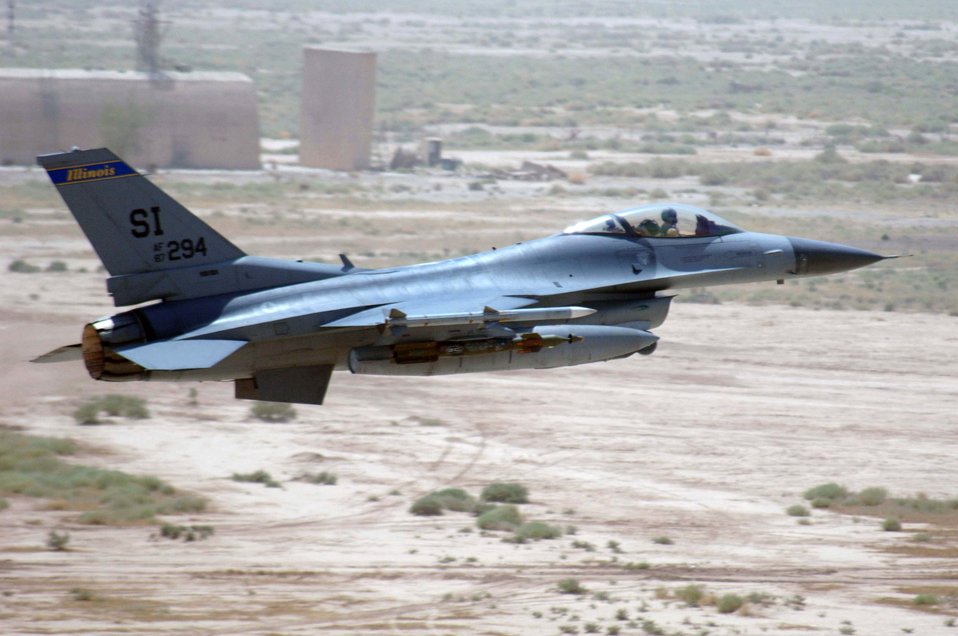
Sand and sky

An F-16 Fighting Falcon assigned to the 332nd Expeditionary Fighter Squadron at Balad Air Base, Iraq, takes off on an Operation Iraqi Freedom mission Friday, July 21. The F-16 jet is deployed from the 183rd Fighter Wing at Springfield Air National Guard, Ill., and provides close-air support and